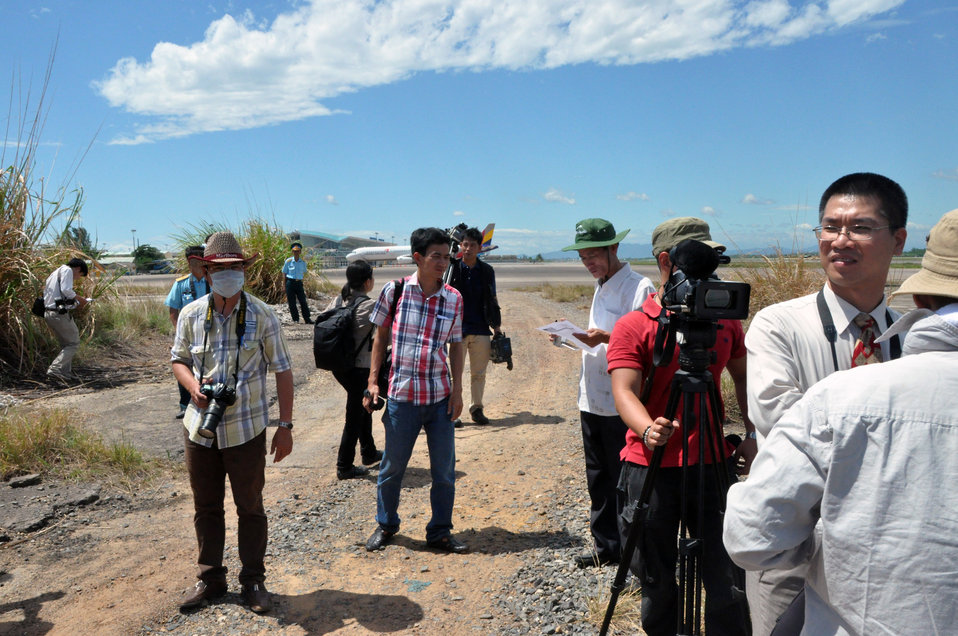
Photographers and visitors tour the airport site at the Environmental Remediation of Dioxin Contamination at Danang Airport Project Launch

Danang, August 9, 2012